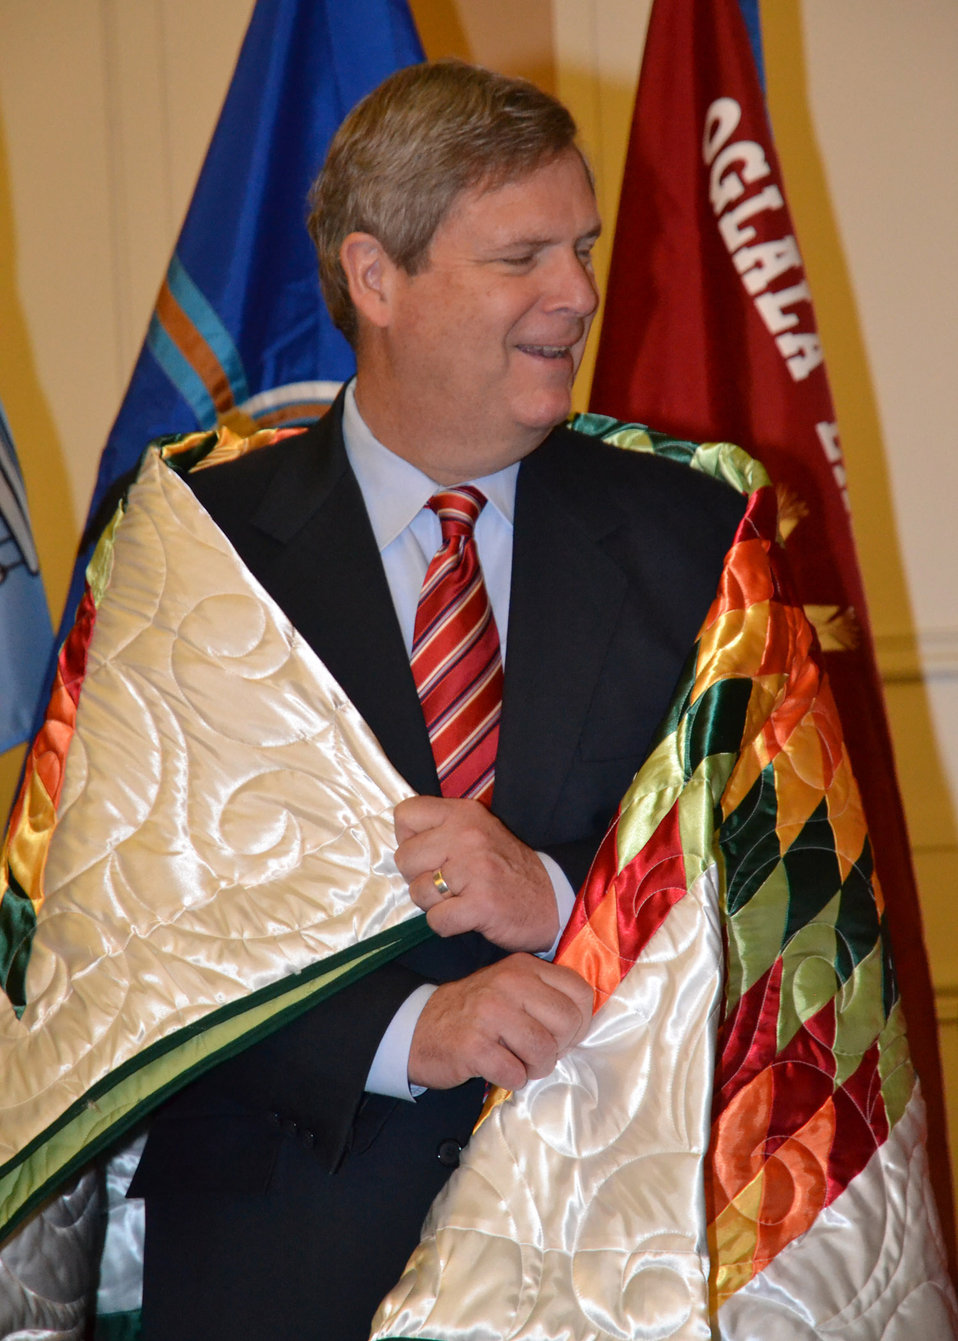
Agriculture Secretary Tom Vilsack was presented a blanket from Pine Ridge Reservation, S.D., at the Indian Agriculture Symposium, in Las Vegas, NV, on Wednesday, December 7, 2011. Secretary Vilsack was the keynote speaker.